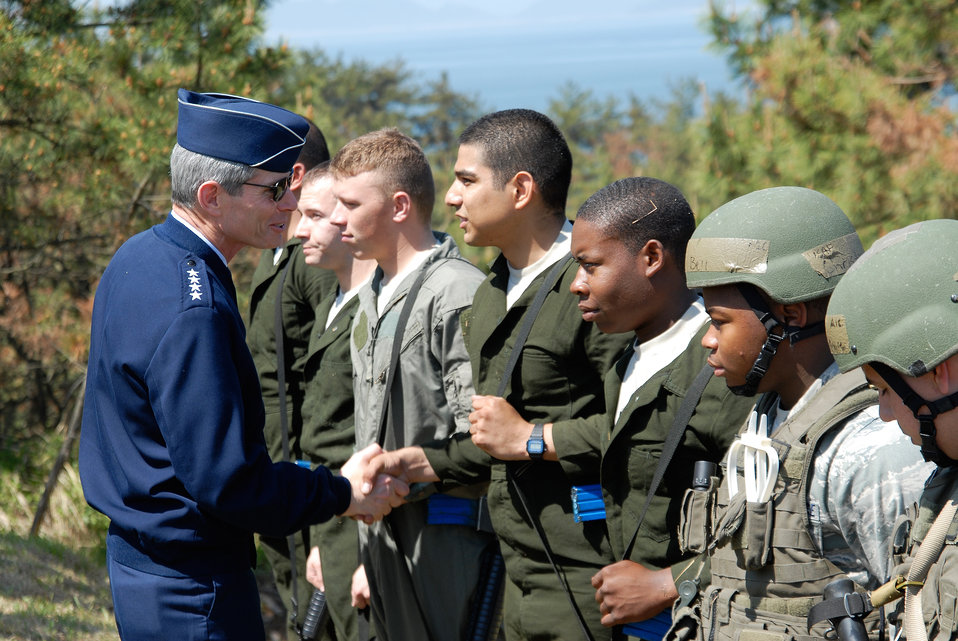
Chief of Staff of the U.S. Air Force Visits Kunsan

Gen. Norton A. Schwartz, Chief of Staff of the U.S. Air Force, greet Airmen from the 8th Security Forces Squadron after a demonstration at Kunsan Air Base, Republic of Korea, May 10, 2009.